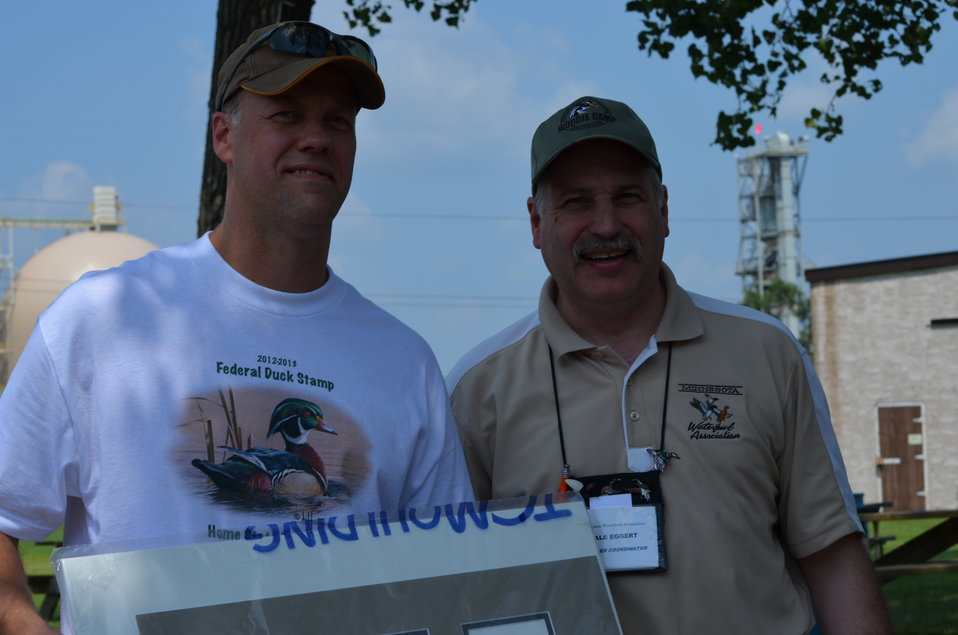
Dale Eggert, Minnesota Waterfowl Association (right), and fellow waterfowl and Duck Stamp enthusiast.